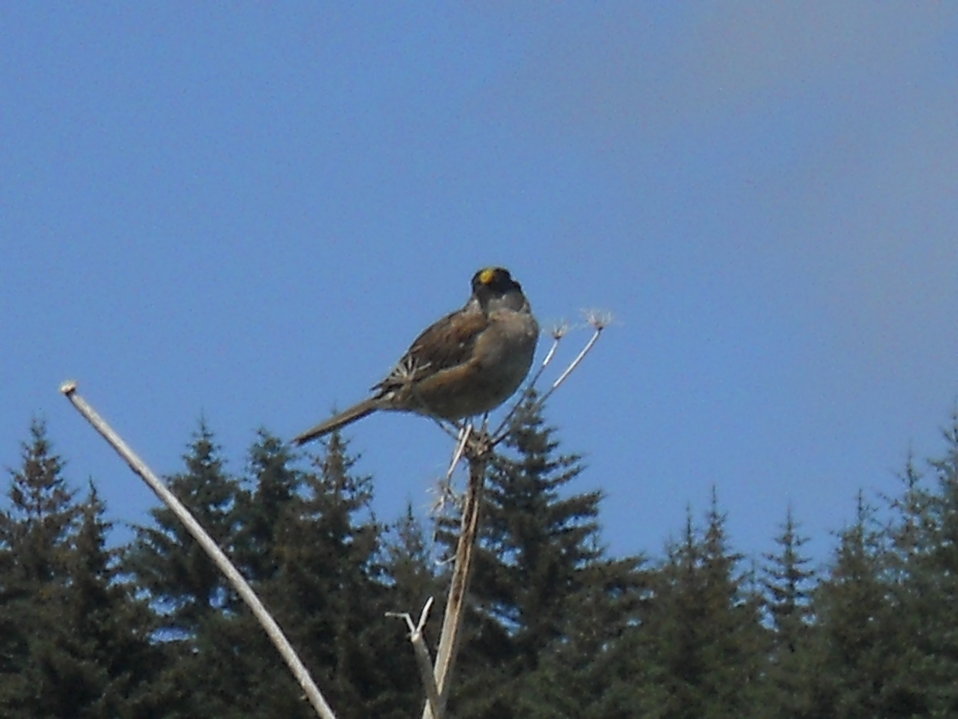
Perched Bird

Credit: USFWS
Photo taken by a Salmon Camp participant during a nature photography activity.

Source and Contact: Kodiak National Wildlife Refuge